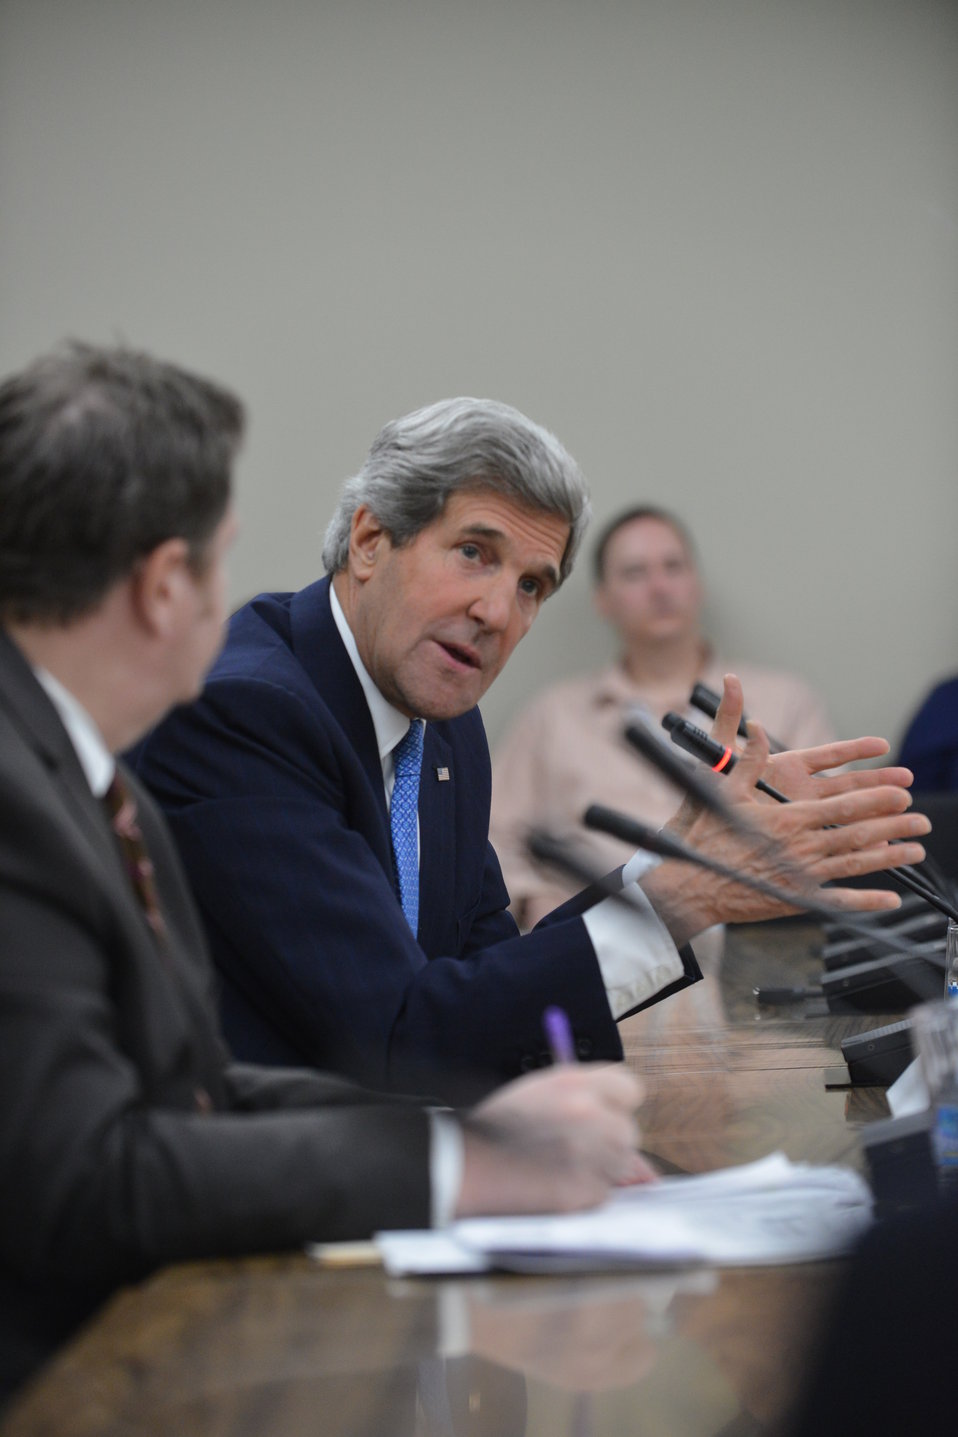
Secretary Kerry Delivers Remarks at the National Conference of the Association of Opinion Journalists

U.S. Secretary of State John Kerry delivers remarks at the National Conference of the Association of Opinion Journalists at the U.S. Department of State in Washington, D.C., on April 29, 2013.